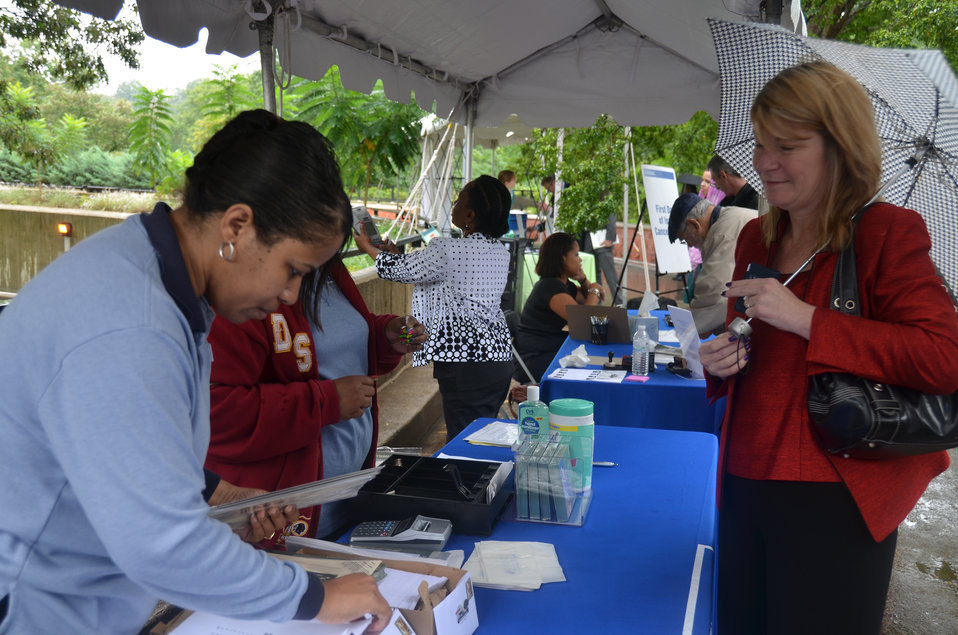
Save Vanishing Species Stamp First Day of Issue